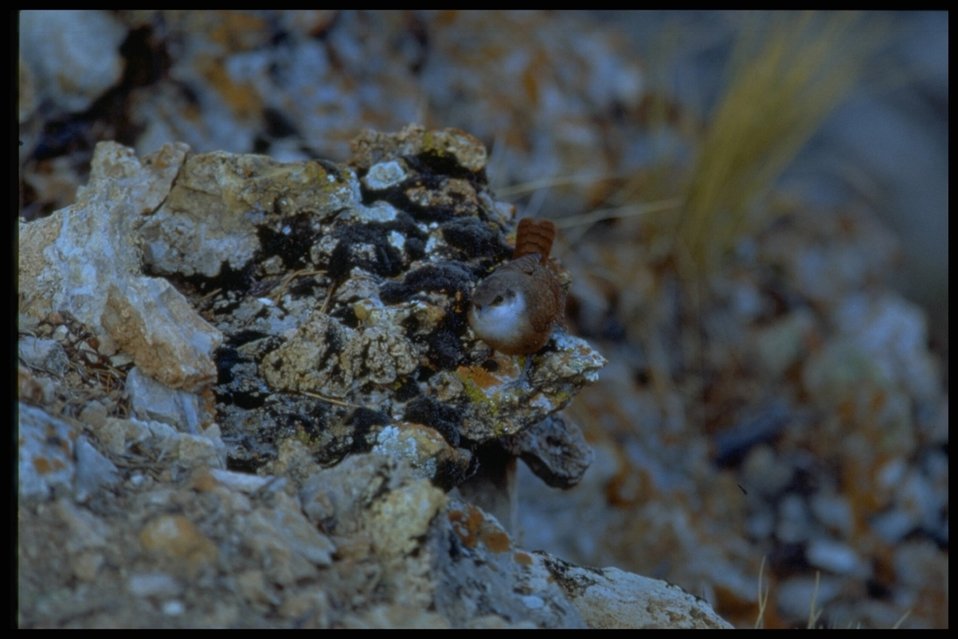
Can you tell what it is? It's a bird resting on a rock blending with the view at the Parashant National Monument.